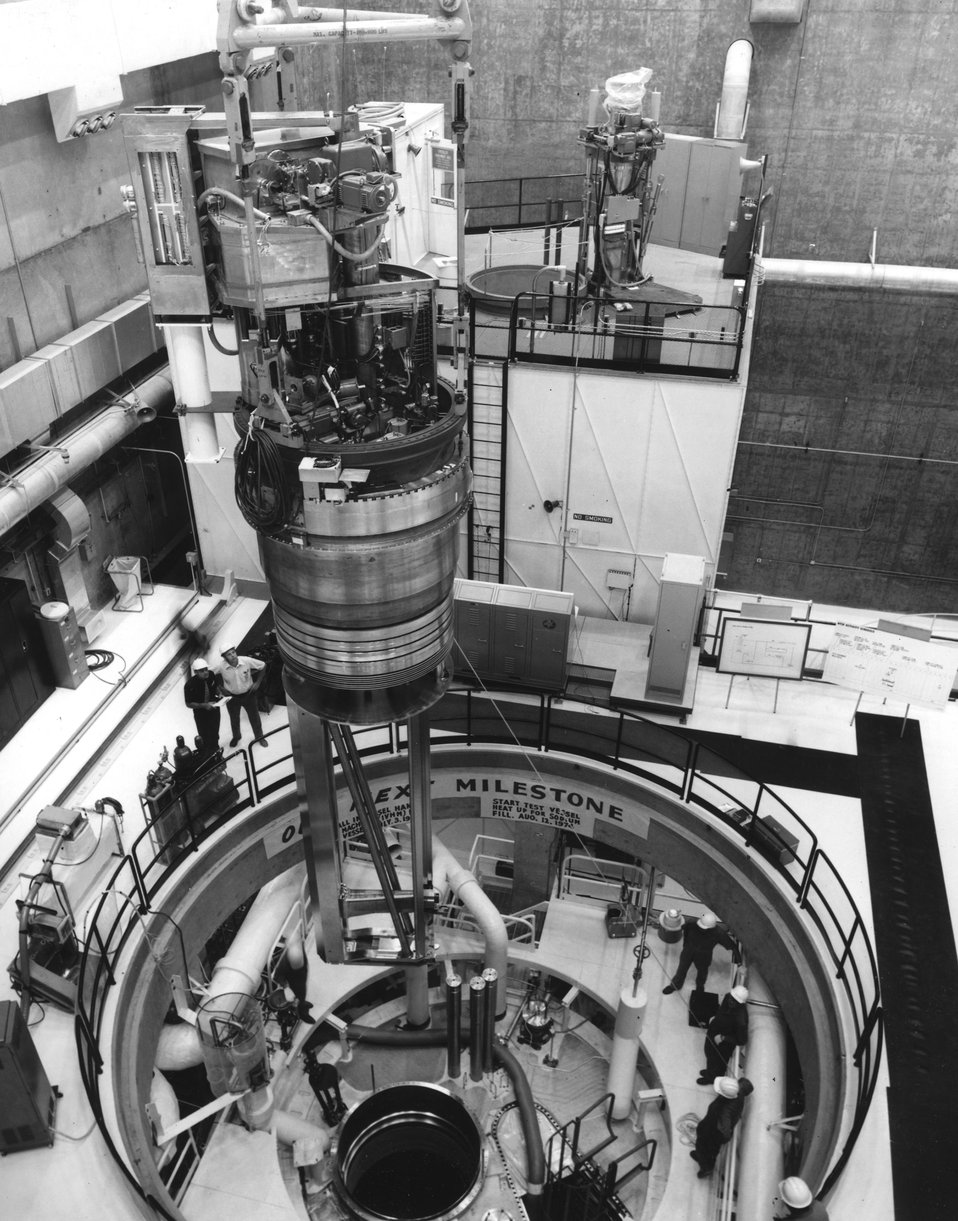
The Fast Flux Test Reactor's in-vessel handling machine was tested at the high Temperature Sodium Facility in fall 1974. c. 1974